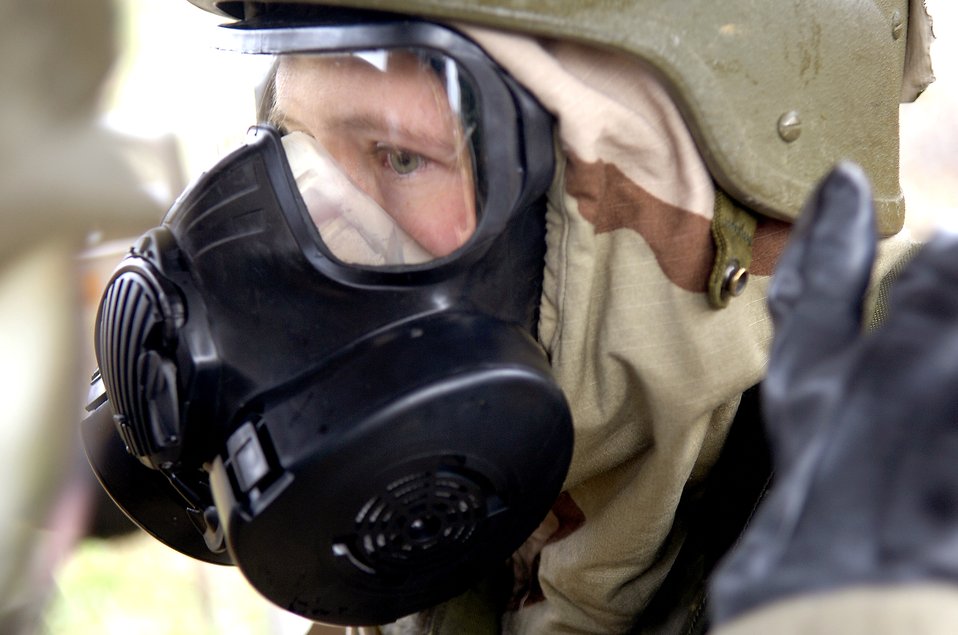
Readiness troops train for the future

Staff Sgt. Jessica Feil dons a mask Nov. 16 during a readiness exercise at Fort Leonard Wood, Mo. The exercise is designed to give readiness Airmen training scenarios developed from lessons learned during operations Iraqi Freedom and Enduring Freedom. The two-day exercise is the part of a two-week training class here. Sergeant Feil is a readiness technician with Detachment 1, 823rd Red Horse, Tyndall Air Force Base, Fla.